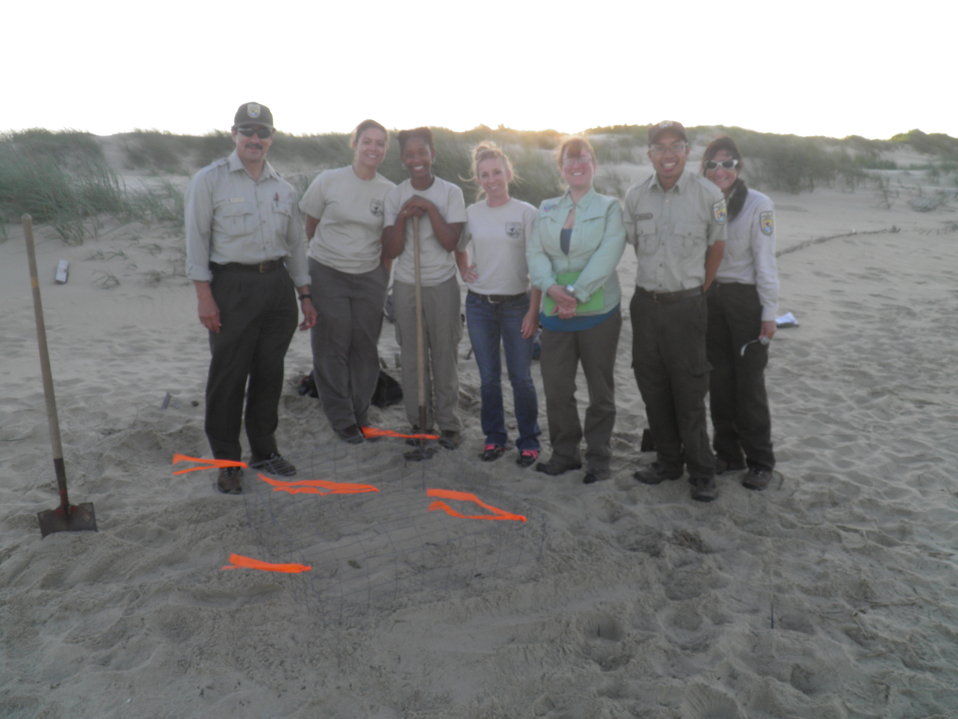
Back Bay Staff

Credit: USFWS
Crawl 3, Nest 3